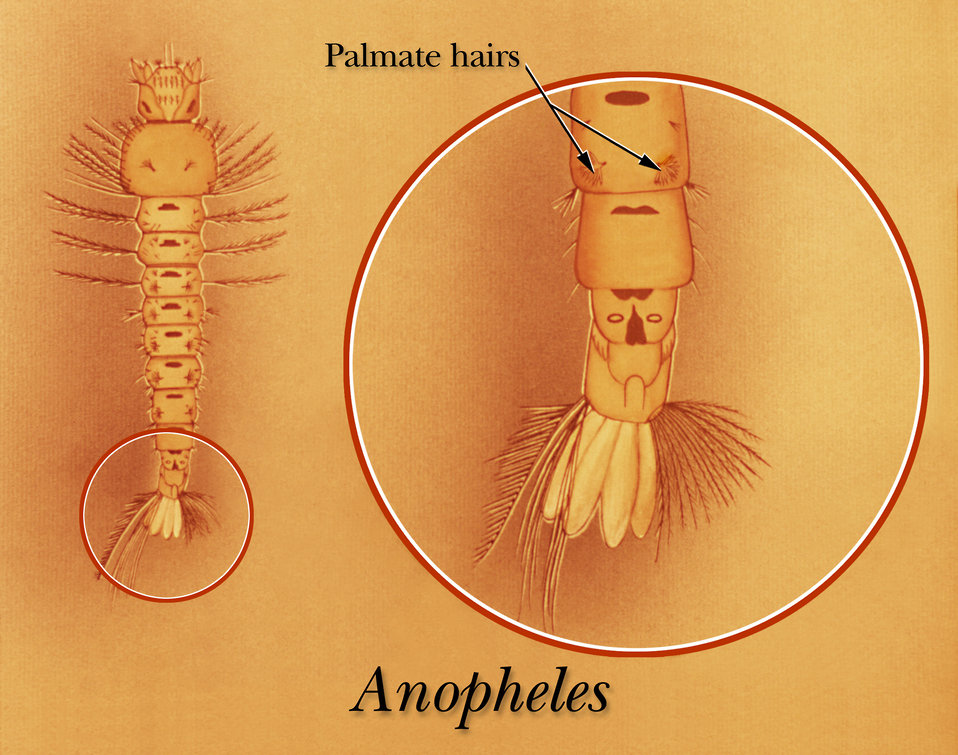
An illustration identifying the palmate hairs of an Anopheles mosquito larva.